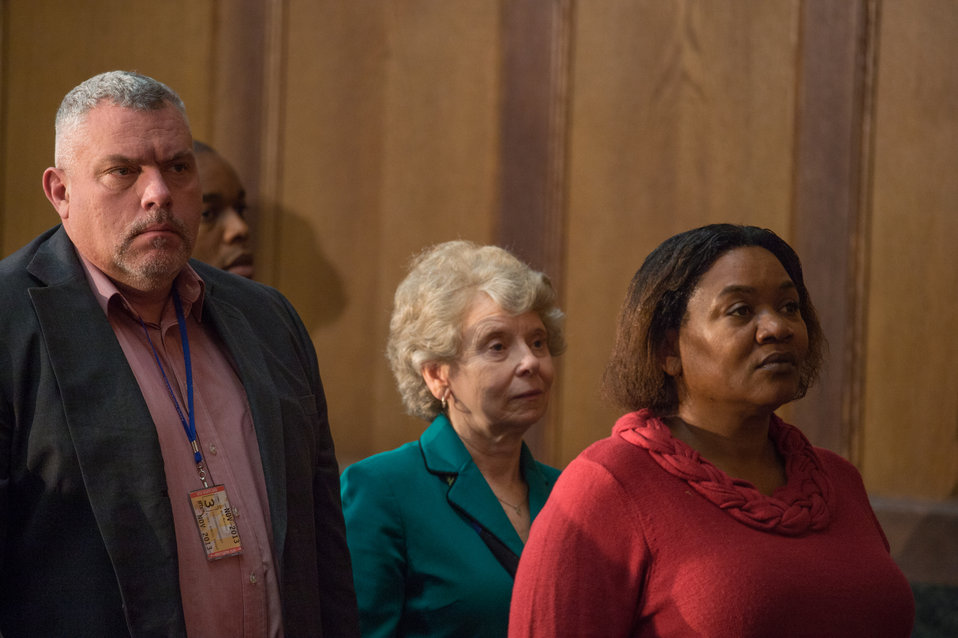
U.S. Department of Agriculture (USDA) personnel who have served, or are serving in a Uniformed Armed Service are called by their past or present Service to stand and be honored with the singing of each of the major Service songs sung by soprano Amy Keesun Kwon, during the 2013 USDA Veterans’ Day Observance, whose theme is “VALOR, COURAGE, SACRIFICE – HONORING ALL WHO SERVED,” in Washington, DC, on Wednesday, November 20, 2013.